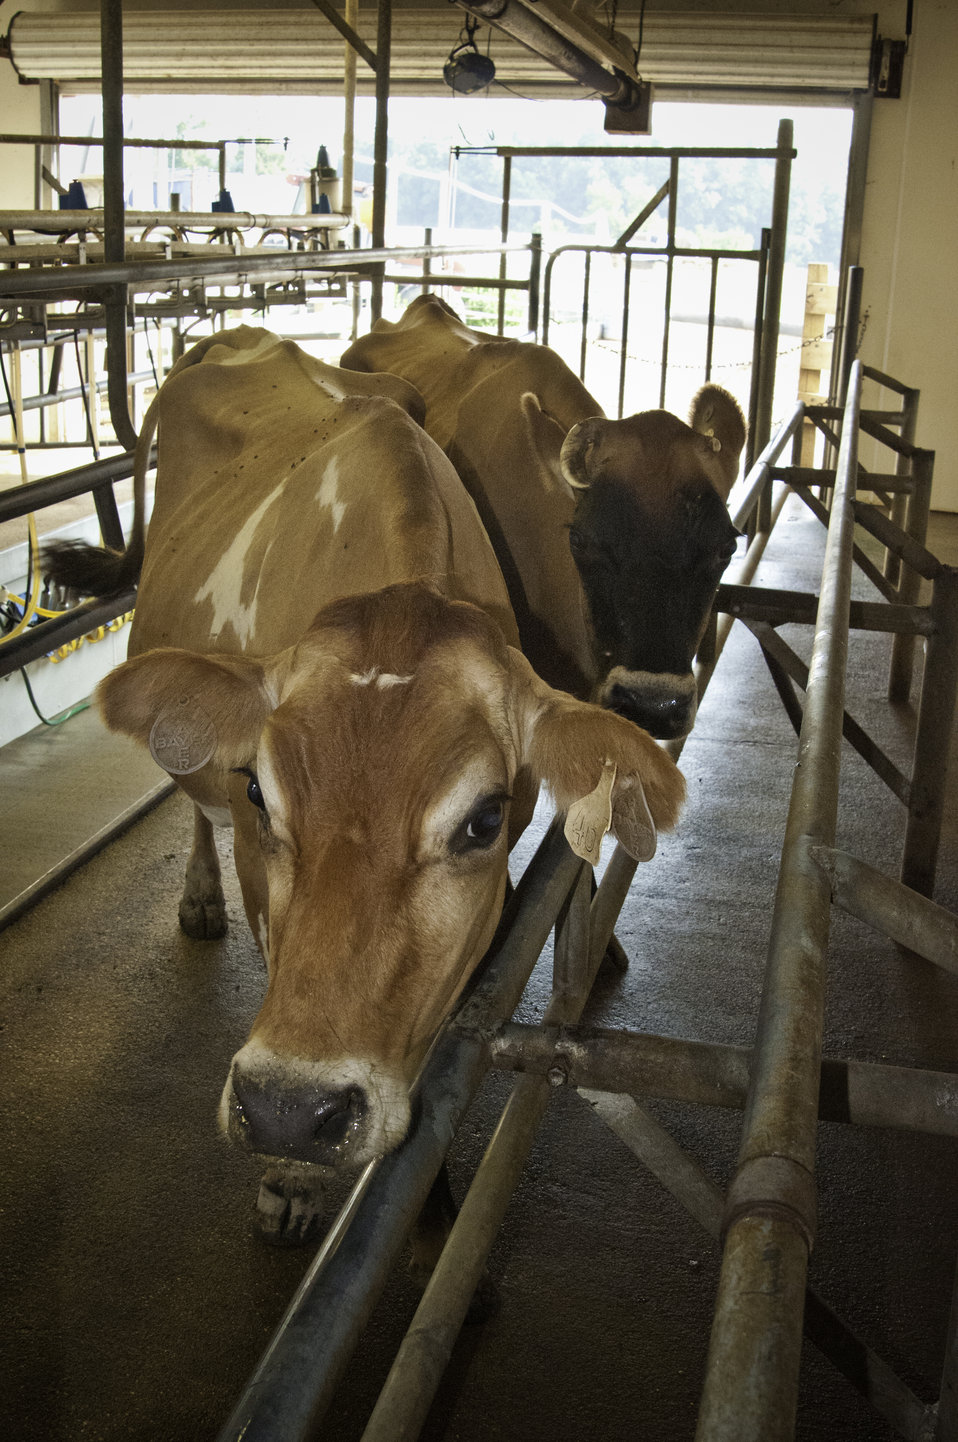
Grass fed Jersey and Holstein cows of Chapel’s Country Creamery in Easton, MD wait to be milked. The dairy produces artisanal cheeses with high quality fresh raw milk, rich in cream. The milk contains no synthetic hormones, antibiotics, or chemical compounds.